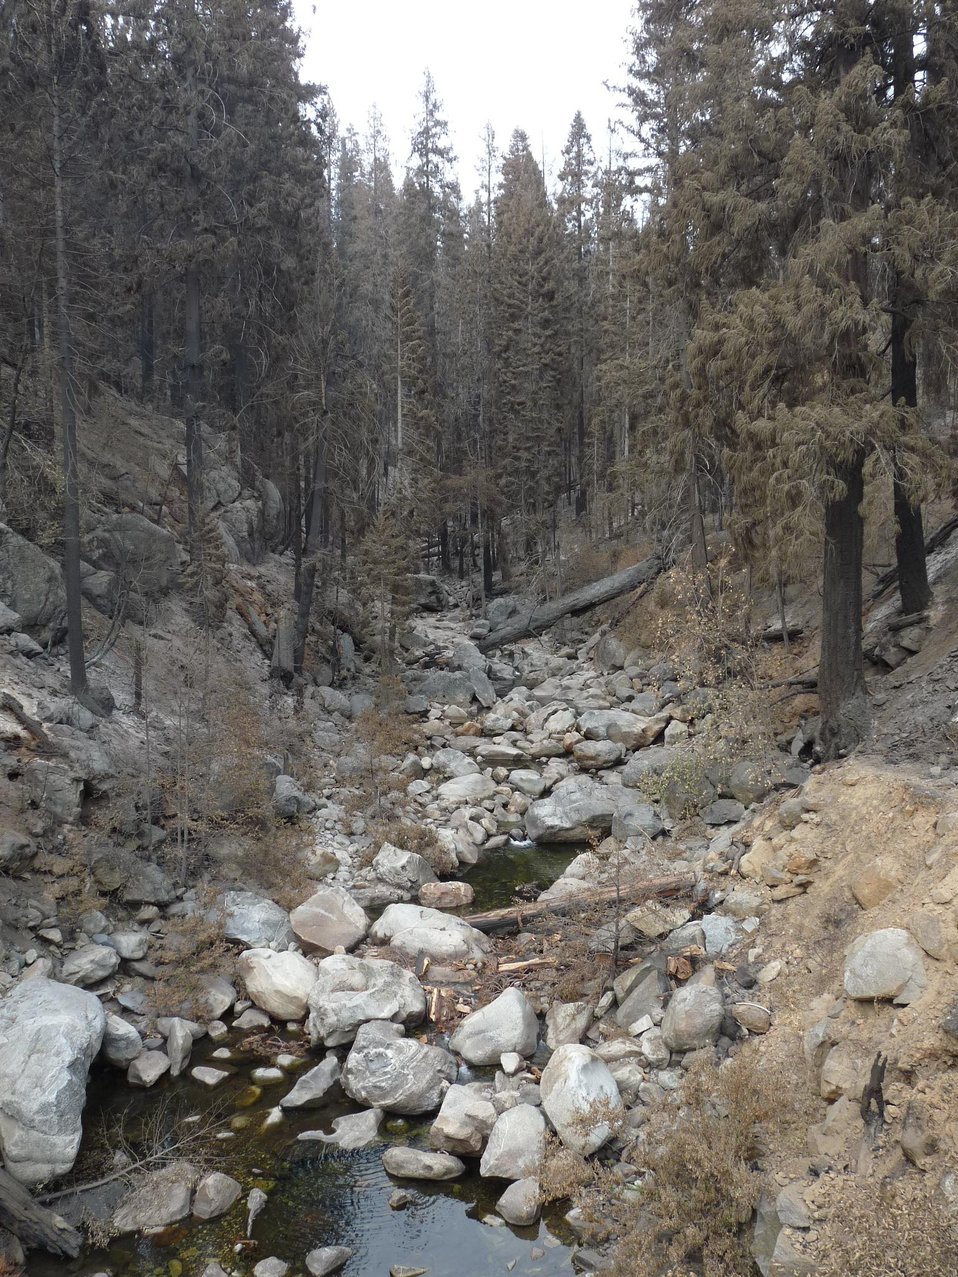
Ash and dead trees impacts the flow along Red Creek at Cottonwood Road Crossing. BAER is a rapid assessment of burned watersheds by a BAER team to identify imminent post-wildfire threats to human life and safety property and critical natural or cultural resources on National Forest System lands and take immediate actions to implement emergency stabilization measures before the first major storms. Fires result in loss of vegetation exposure of soil to erosion and increased water runoff that may lead to flooding increased sediment debris flows and damage to critical natural and cultural resources. BAER team members implement seeding and mulching installation to prevent erosion, erect temporary water run-off control structures that will protect recovering areas, and installation of warning signs, replace safety related facilities, remove safety hazards, prevent permanent loss of habitat for threatened and endangered species, and prevent the spread of noxious weeds and protect critical cultural resources. The Rim Fire in the Stanislaus National Forest near in California began on Aug. 17, 2013 and is under investigation. The fire has consumed approximately 256,169 acres and is 84% contained.